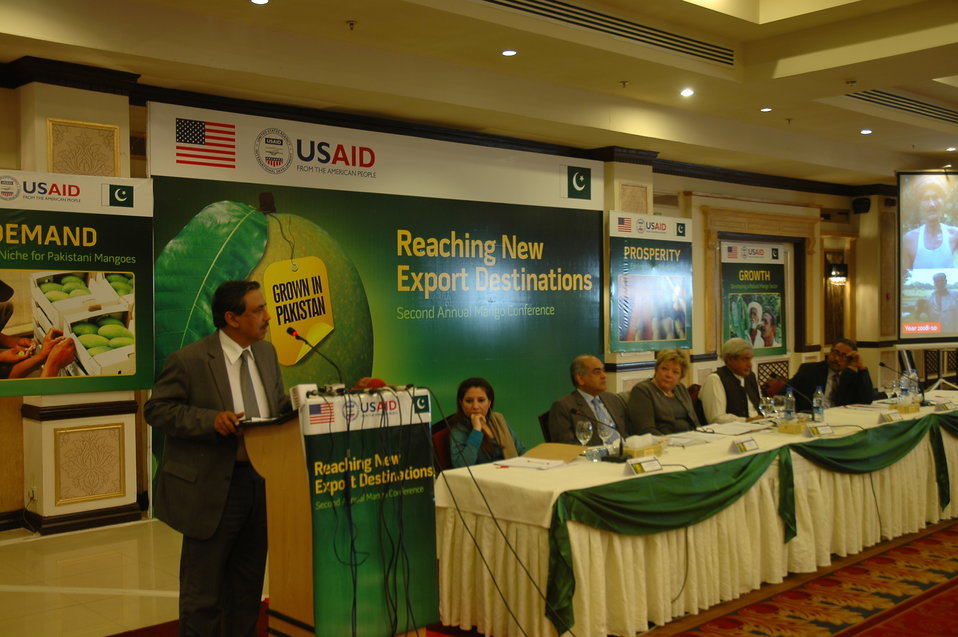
Reaching New Export Destinations

Mr. Zafar Mahmood, Secretary for Commerce, Government of Pakistan, addresses the conference participants which included mango farmers, demand-side market players, trade facilitators, other donors, and academia together to review the achievements of the USG support for Pakistan's mango industry.
Sitting from Left to Right: Kanwal Bokharey (USAID Economic Growth Advisor), Tariq Puri (Chief Executive, Trade Development Authority of Pakistan), Karen Freeman (USAID Deputy Mission Director), Fakhar Imam, (Ex-Speaker, National Assembly of Pakistan),
William Patterson (USAID Director Economic Growth and Agriculture Office)